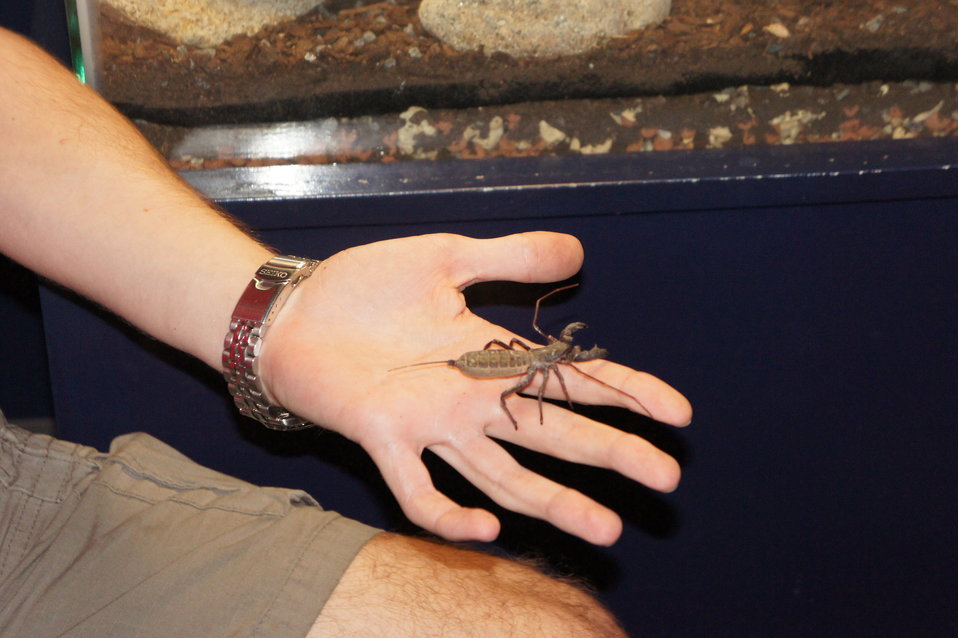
Vinegaroon at the Smithsonian National Zoo

A volunteer displays the vinegaroon, a type of arachnid that gets its name from a vinegar-smelling mist that it sprays when threatened.